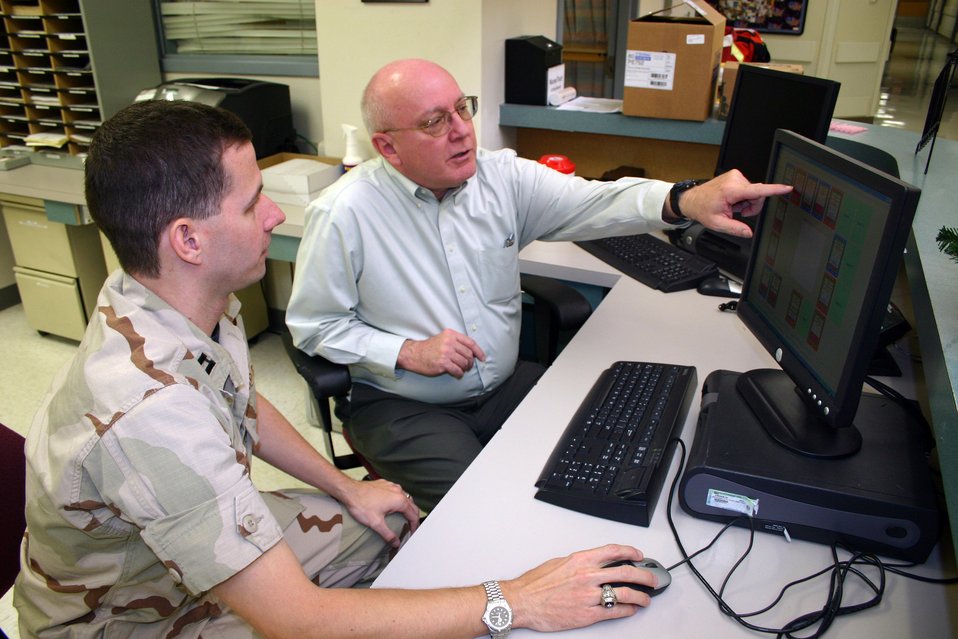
Crash a good thing

LACKLAND AIR FORCE BASE, Texas (AFPN) -- Capt. (Dr.) Allen Holder (left) discusses the new EM3 patient tracking system at Wilford Hall Medical Center with software engineer Ed Hander. The emergency medicine staff physician joined forces with Mr. Hander to develop the new tracking system. The system tracks more than 150 patients daily and has tracked more than 17,000 since inception. The new system worked so well that medical officials here are trying to get it used Air Force-wide.